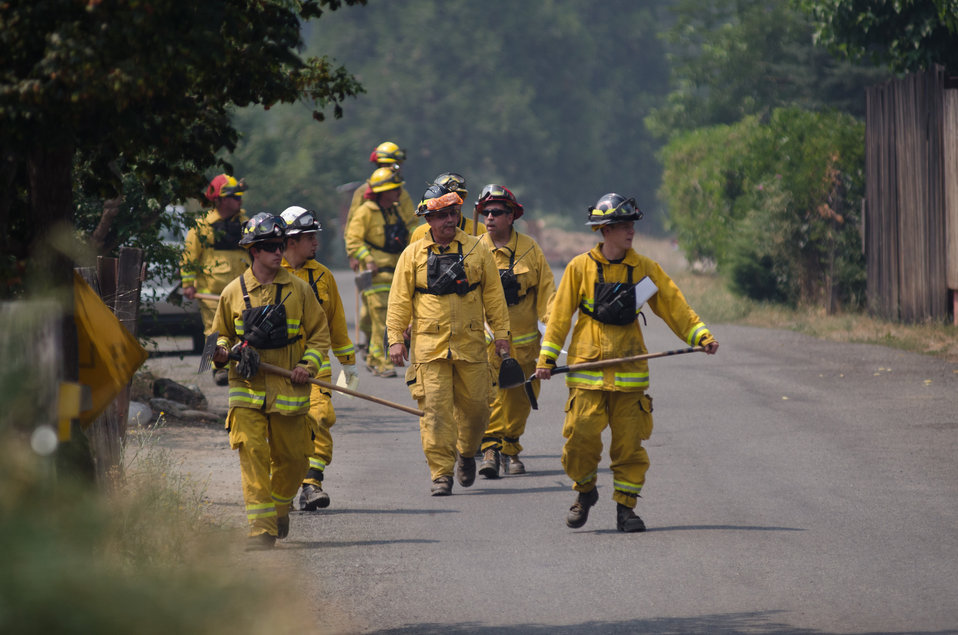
Fire fighters specializing both structural and wildland firefighting from Tahoe National Forest, Mt. Shasta-Trinity National Forest, South Yreka Fire Department, Dunsmuir-Castella Fire Department and others, have been called to the Salmon River Complex Fire, and conduct their structure-by-structure assessment of the urban intermix environment, at Sawyers Bar, CA in the Klamath National Forest, Tuesday, Aug. 6, 2013. The firefighters advise resident about fire prevention measures they are doing on their own as well as other measures they could take to prepare for fire. Actions such as moving away firewood, cutting and clearing plants next to their structures, and using garden hoses to soak structures and grounds all help in the event the main fire comes into their town.
There are two types structure environments in the realm of wildland firefighting.
This urban intermix structural protection environment is generally the more challenging, where structures have been built within a wildland area, isolated to some degree from other structures, but with no separation from wildland fuels (trees, brush and grass). This requires each structure to be assessed on a case-by-case basis. Fire protection measures will be tailored to each situation; defending these structures require a more complex solution, more firefighters, equipment and resources per structure.